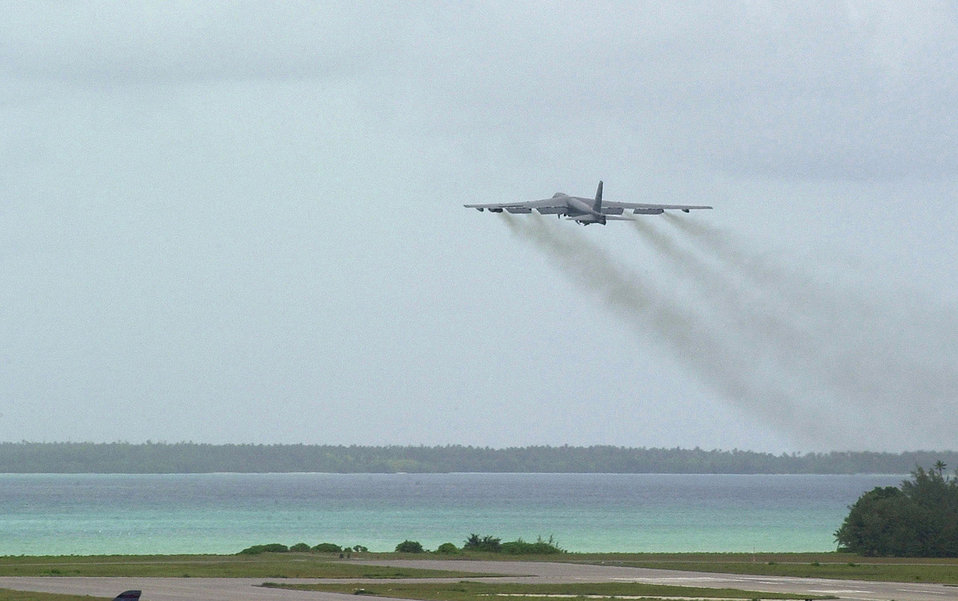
Buff launch

OPERATION ENDURING FREEDOM -- A B-52 Stratofortress from the 28th Air Expeditionary Wing takes off for a combat mission Oct. 22 in support of Operation Enduring Freedom. B-2 Spirit, B-1 Lancer and B-52 bombers have expended more than 80 percent of the tonnage dropped on combat missions over Afghanistan. The Air Force has flown more than 600 sorties including strike missions against al Qaeda and Taliban targets in Afghanistan. These targets include early-warning radars, ground forces, command-and-control facilities, al Qaeda infrastructure, airfields and aircraft.